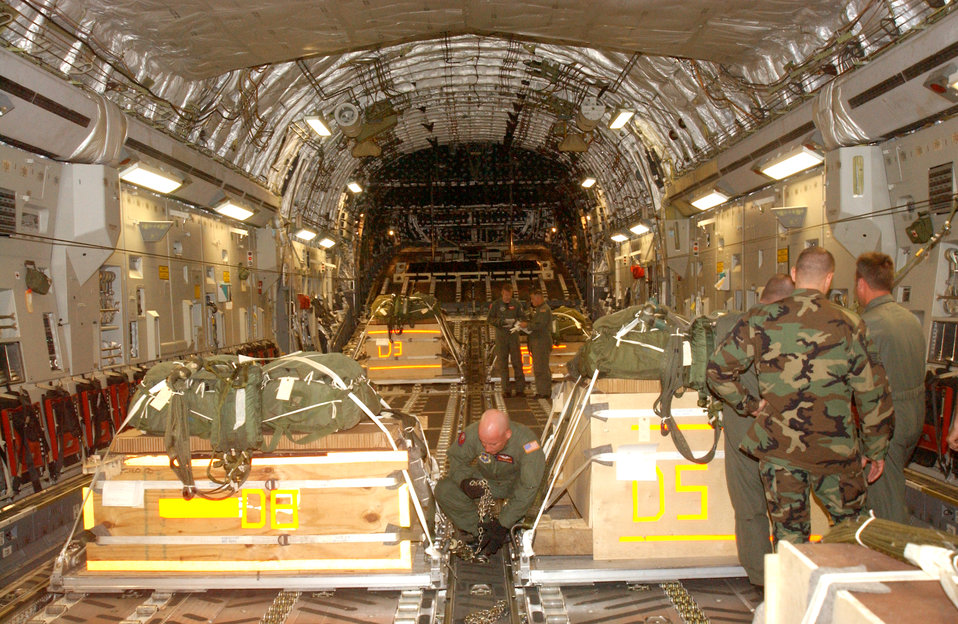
Altus aircrew showcases dual-row airdrop

ALTUS AIR FORCE BASE, Okla. -- Loadmasters chain down cargo and make final checks on a C-17 Globemaster III on July 5 in preparation for a dual-row airdrop.